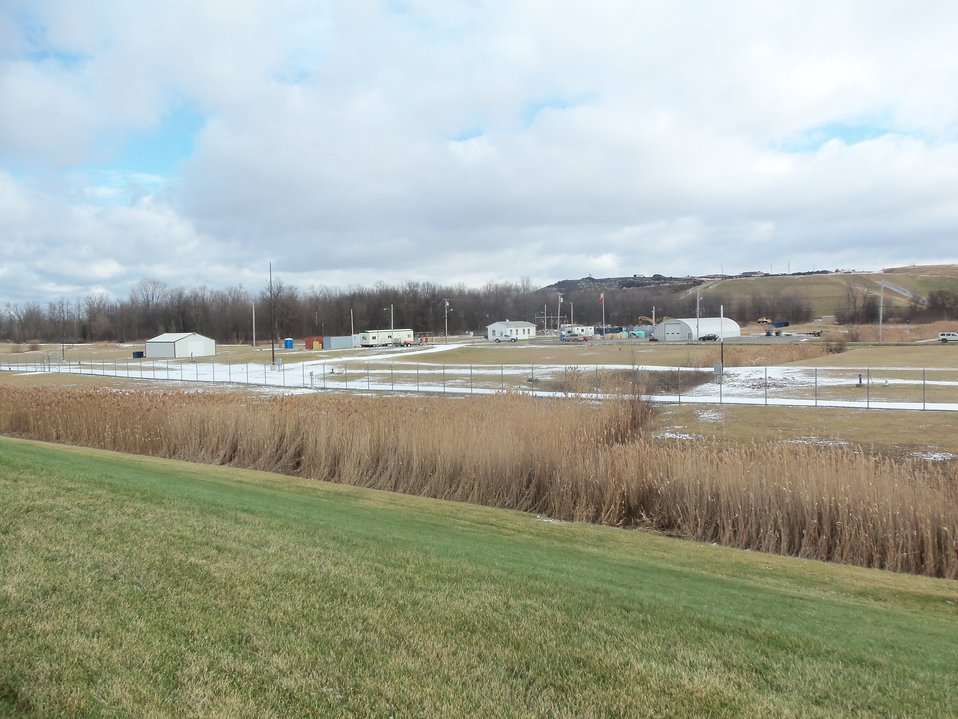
Photo of area Building 401 from cap.
Activities from the Niagara Falls Storage Site, which is associated with the former Lake Ontario Ordnance Works. Formerly Utilized Sites Remedial Action Program (FUSRAP), a program initiated in 1974 to identify, investigate and clean up or control sites that were part of the Nation's early atomic energy and weapons program. Activities at the sites that are eligible for FUSRAP were conducted by Manhattan Engineer District (MED) or the Atomic Energy Commission (AEC), both predecessors of the Department of Energy (DOE). The U.S. Army Corps of Engineers was assigned management of FUSRAP by Congress in 1997.